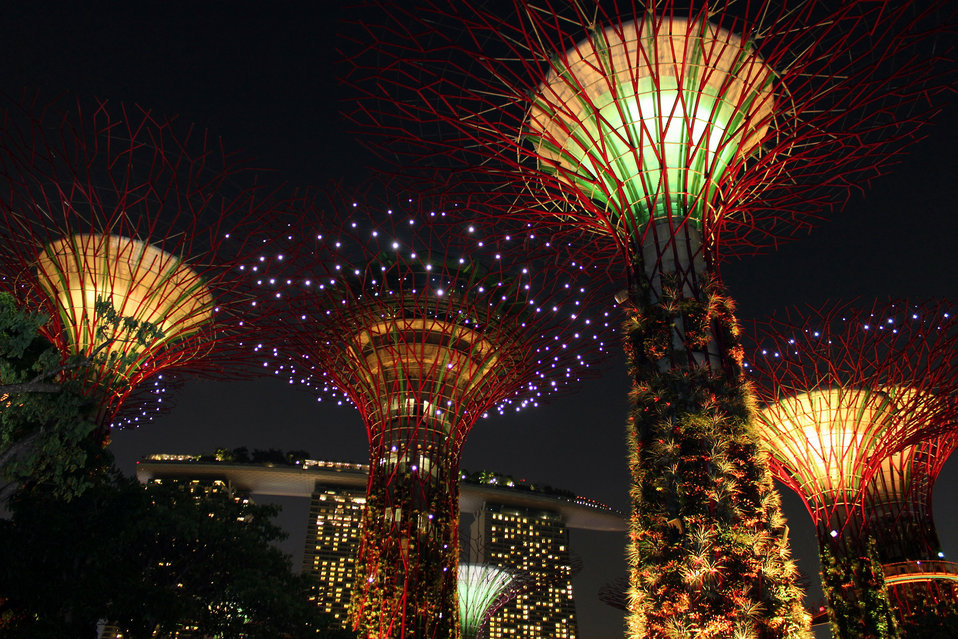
Singapore sky tree night view.